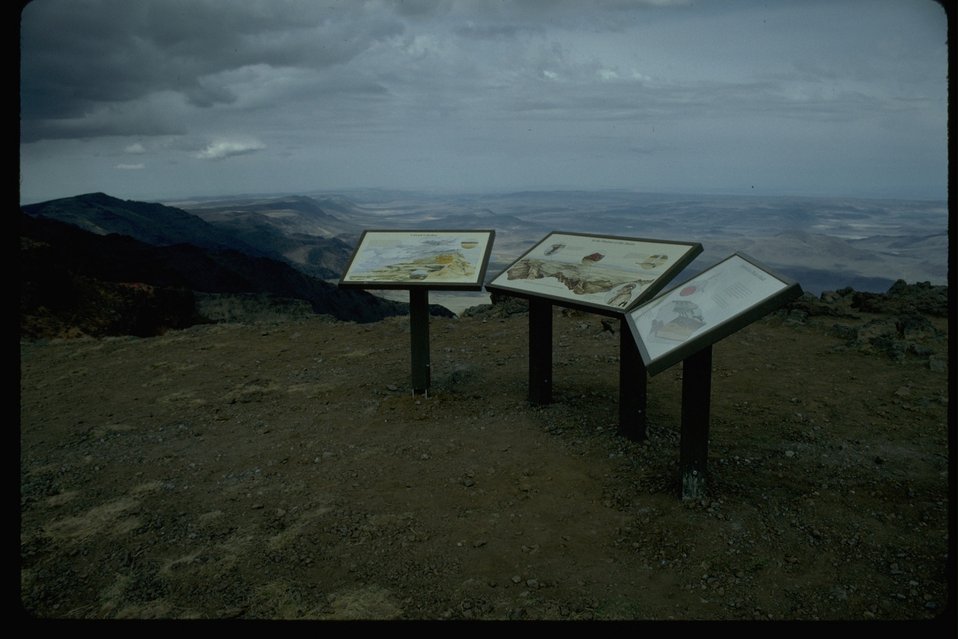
East rim overlook interpretive panels, Steens Mountain.